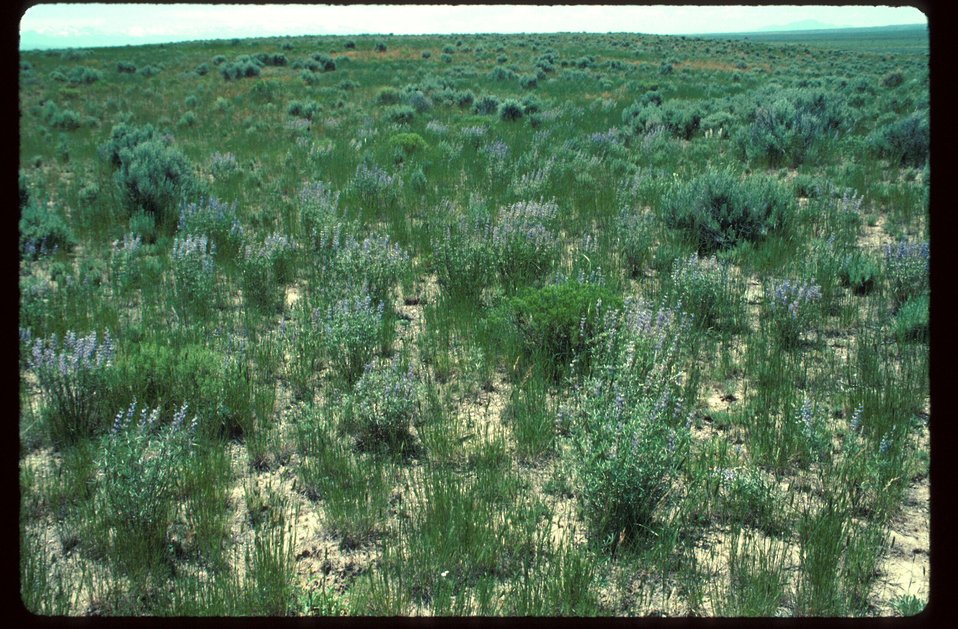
Elko Seeding Field Test Range Restoration Project